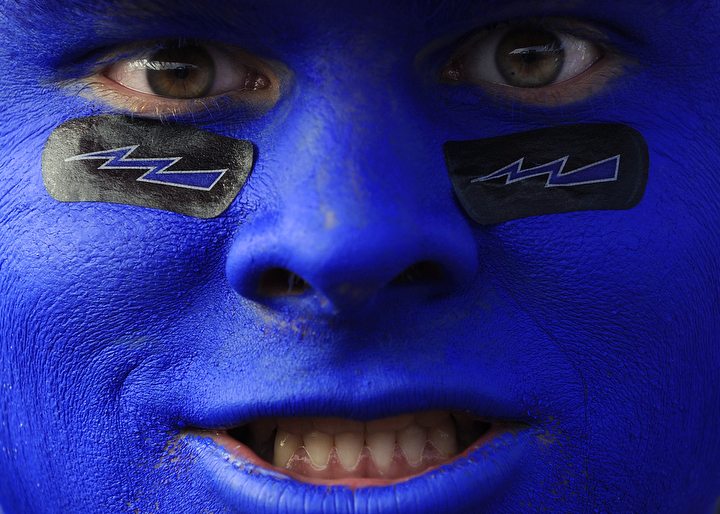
ESPN films 'College GameDay' from Academy

U.S. Air Force Academy Cadet Cobb Brandon shows his team spirt and game face during ESPN's